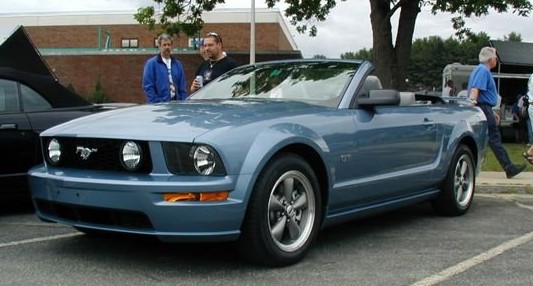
2005 Ford Mustang GT Convertible